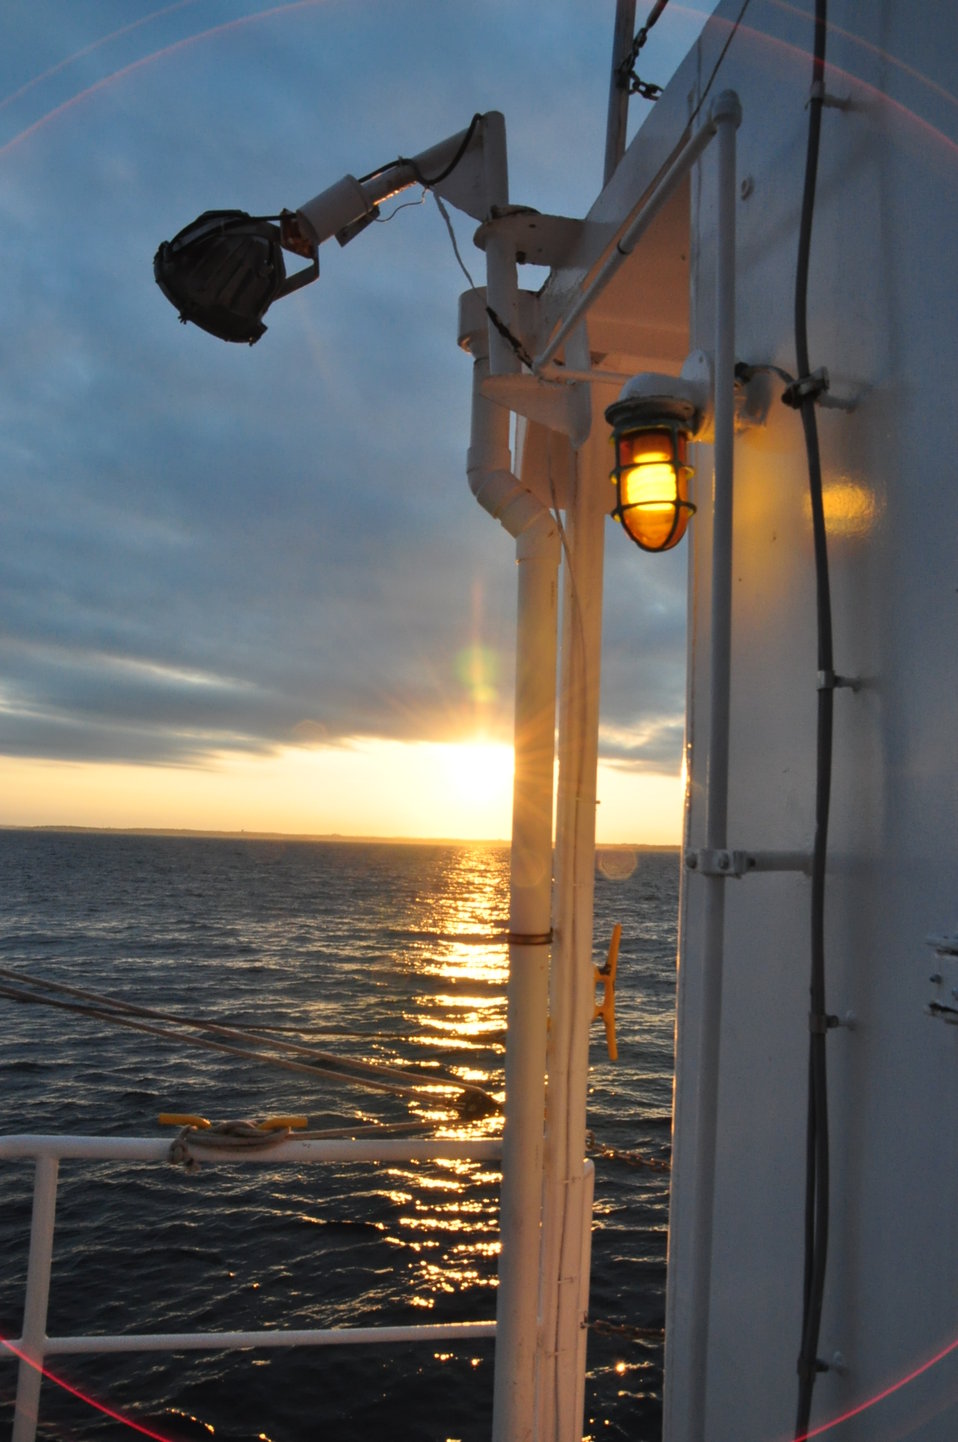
August 5, 2011 Sunset on Day one doesn't disappoint